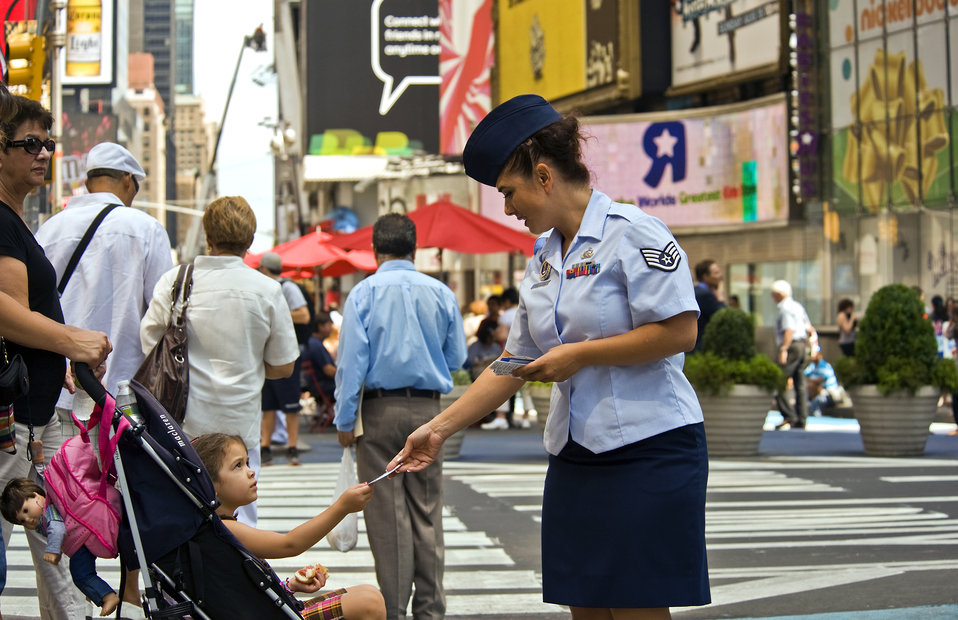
Air Force Week New York

Staff Sgt. Kathleen C. Pena passes out stickers and information for Air Force Week New York to passersby Aug. 26, 2010, in New York's Times Square. Air Force Week brings Airmen to New York neighborhoods to honor hometown heroes, tell their stories, and to thank New Yorkers for their support of Airmen around the world. Sergeant Pena is a recruiter stationed at the Times Square Armed Forces Recruiting Station in the heart of the city.